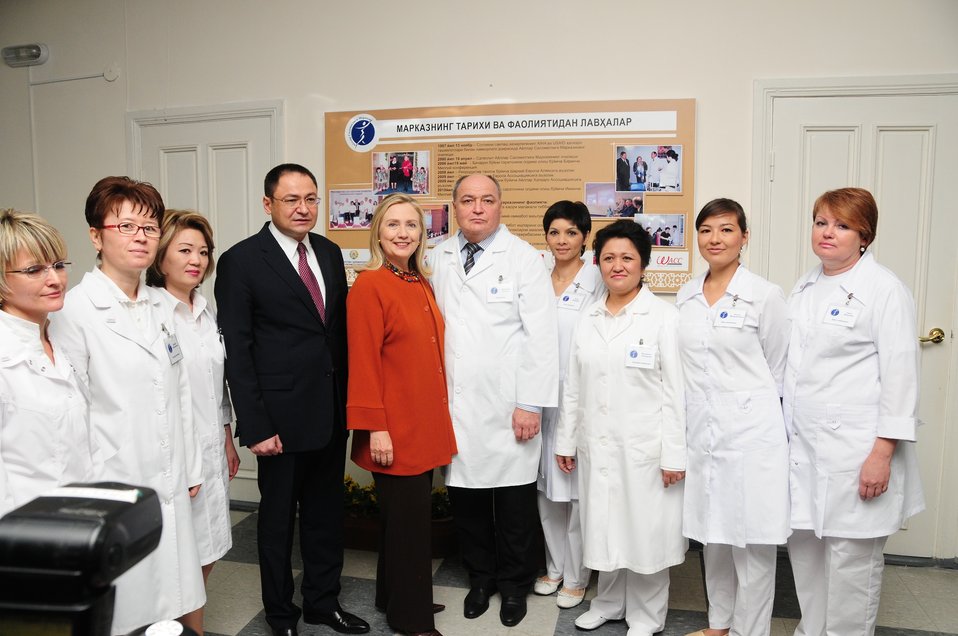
Secretary Clinton Poses for a Photo With Uzbek Health Minister, Dr. Dilmurod, and Wellness Center Staff

U.S. Secretary of State Hillary Rodham Clinton, center, poses for a photo with the Uzbek Health Minister; center left; Director of the Wellness Center Dr. Dilmurod, center right; and Wellness Center Staff at the Women’s Wellness Center in Tashkent, Uzbekistan, on October 23, 2011.